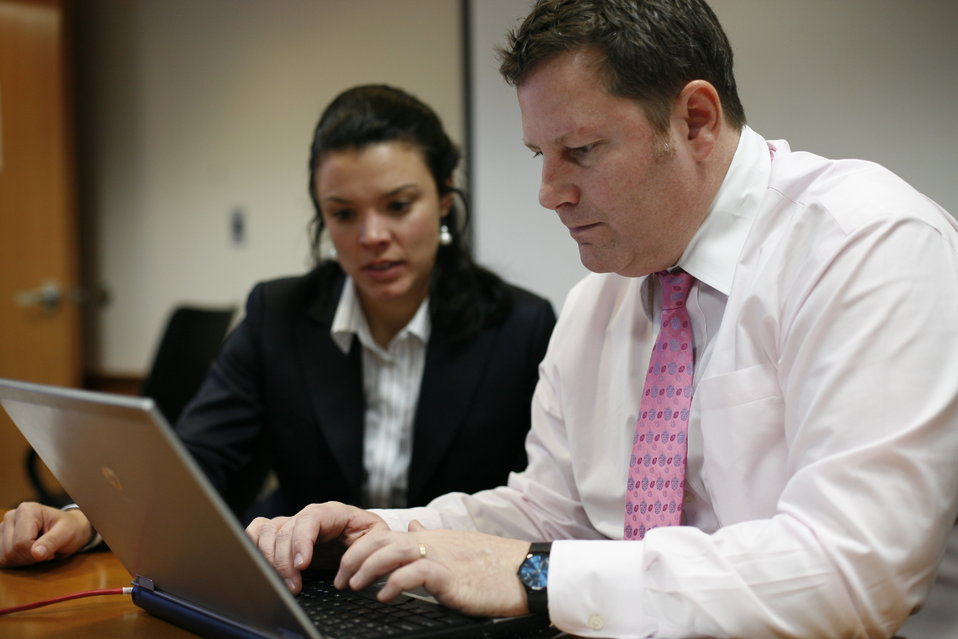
Acting Assistant Secretary Hammer Responds to #AskMike Questions

Acting Assistant Secretary of State for Public Affairs Mike Hammer responds to #AskMike questions from the Department’s official Spanish Twitter feed, @USAenEspanol, on January 24, 2012. Director of International Media Engagement Abigail Dressel looks on.